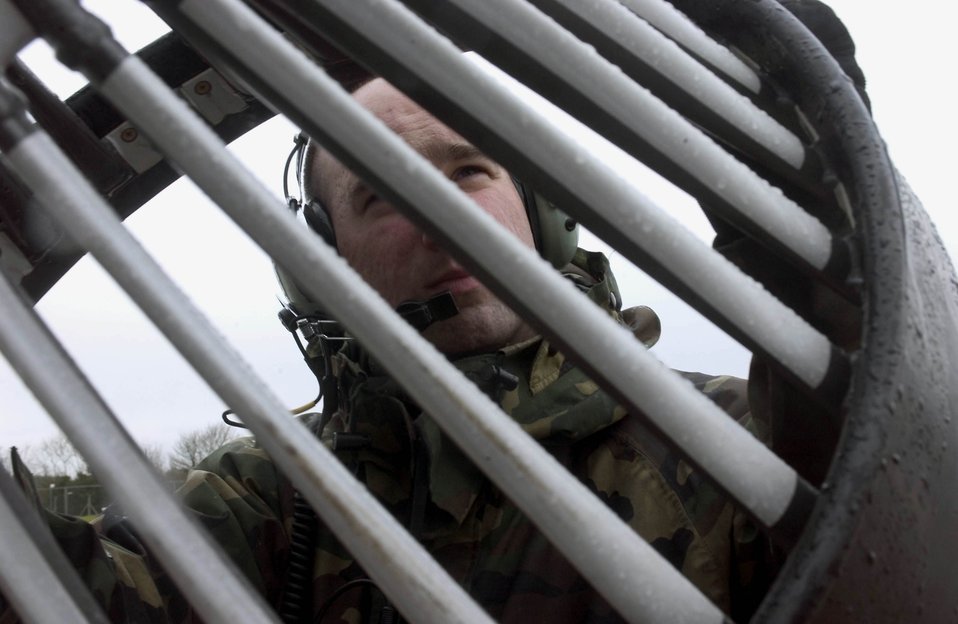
Flying out of Fairford

ROYAL AIR FORCE FAIRFORD, England -- Staff Sgt. Matthew Gniotczynski inspects the basket on a KC-135 Stratotanker from the 351st Expeditionary Air Refueling Squadron at Royal Air Force Mildenhall. The 351st EARS will fly out of the airstrip here while Mildenhall's runway is under construction. Sergeant Gniotczynski is a crew chief with the 351st Expeditionary Maintenance Squadron.